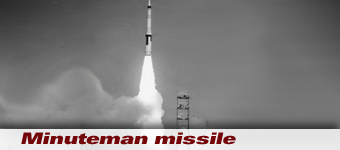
Minuteman

History spotlight graphic for the first Minuteman intercontinental missile launched from an underground silo at Cape Canaveral, Fla.